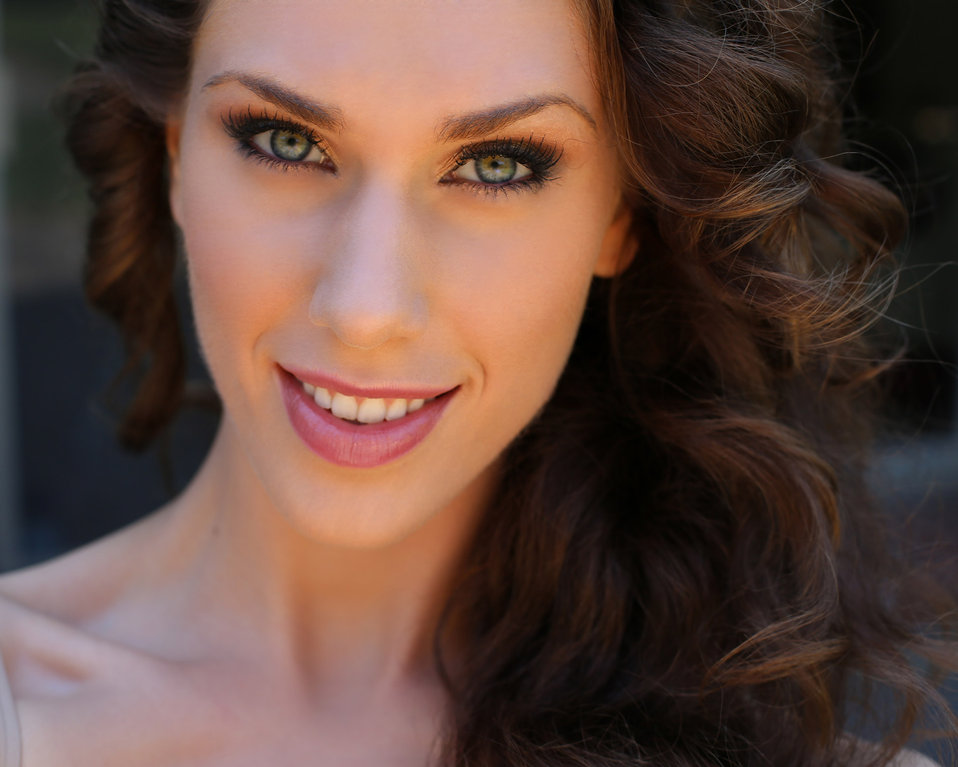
Cassandra bankson model headshot

Cassandra bankson, model with acne & youtube star diamondsandheels14 basic photo.